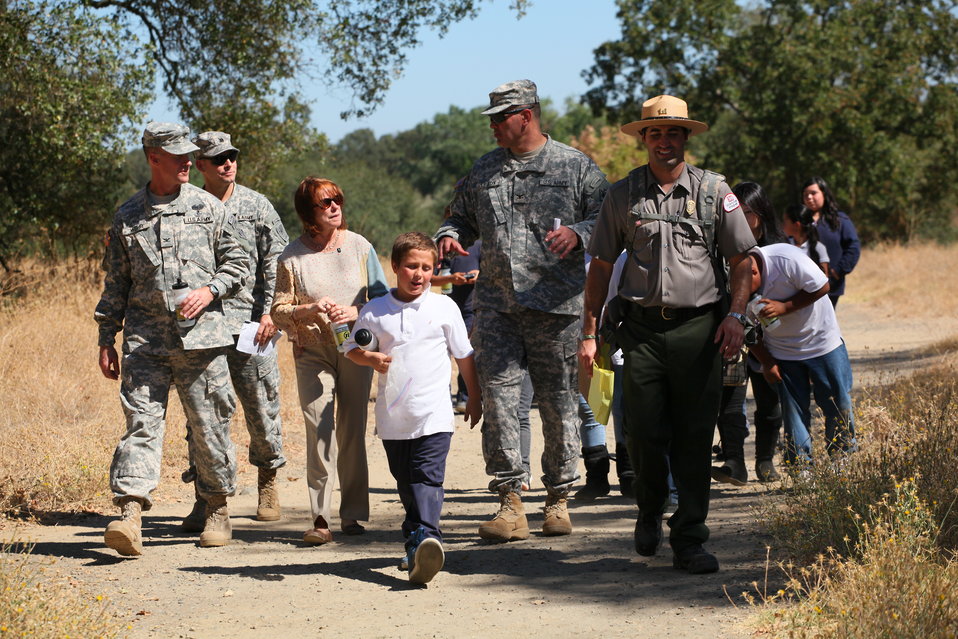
America’s Great Outdoors event at the Effie Yeaw Nature Center

Children from Maple Elementary School take a nature walk with U.S. Army Corps of Engineers park rangers and leaders at the Effie Yeaw Nature Center in Carmichael, Calif., Sept. 27, 2011. The event was in support of President Barack Obama’s America’s Great Outdoors Initiative, established in April 2010, to reconnect the American people with the outdoors. 'Today was all about connecting kids with nature,” said Col. Bill Leady, commander of the U.S. Army Corps of Engineers Sacramento District, which hosted the event. ”Being outdoors is so important; not just for our health, but for understanding the natural world that we belong to. We all have a responsibility to help protect it, and as the nation's environmental engineers, it's important for us to share that message,' he said. Leady (second from right) was joined by Col. Mike Wehr (far left), commander of the U.S. Army Corps of Engineers South Pacific Division, and Assistant Secretary of the Army for Civil Works, Jo-Ellen Darcy (center).